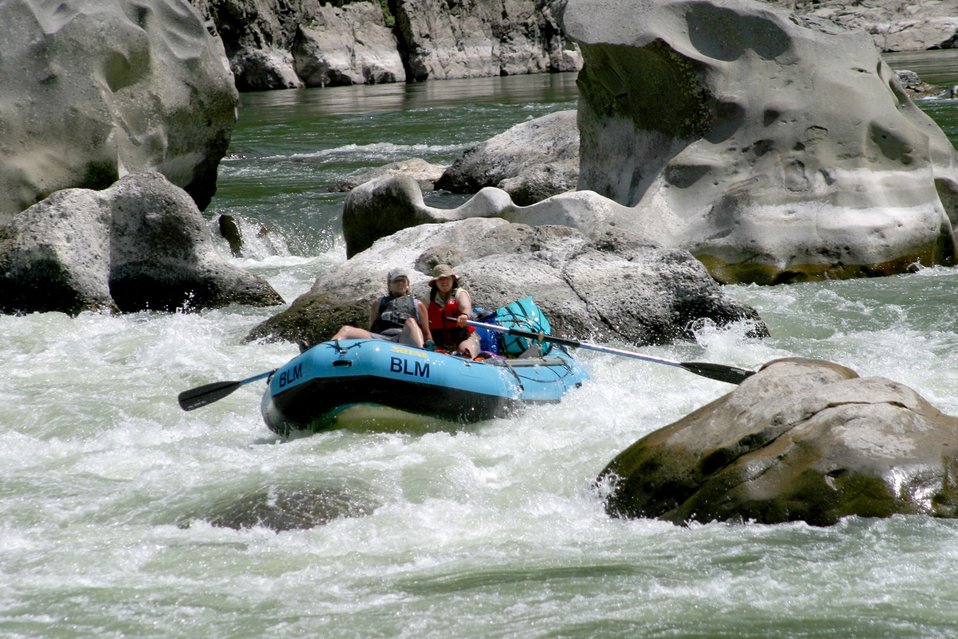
Wild section of the Rogue River from Grave Creek to Foster Bar May 19 to May 22.